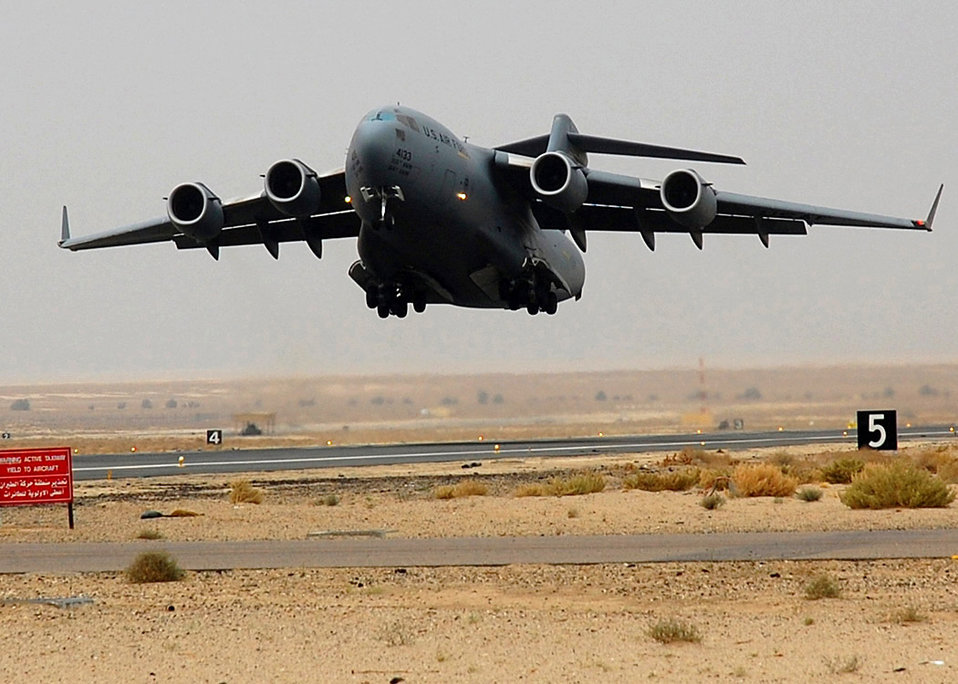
Jan. 15 airpower summary: C-17s key to transport missions

A C-17 Globemaster III takes off from an air base in Southwest Asia. The C-17's primary mission is to transport servicemembers and cargo in support of Operations Enduring Freedom and Iraqi Freedom.